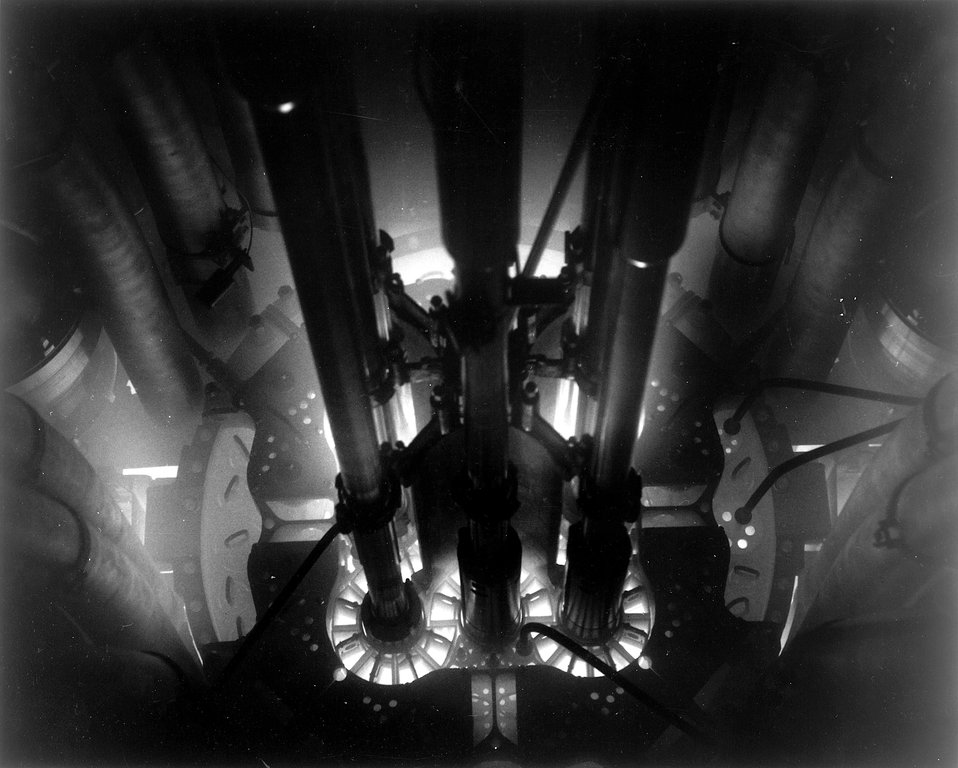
Under 20 feet of coolant water, part of the Advanced Test Reactor's four-lobed, clover leaf core is clearly outlined by the Cerenkov glow from nuclear operation at the AEC's National Reactor Testing Station in Idaho. Circa 1970.